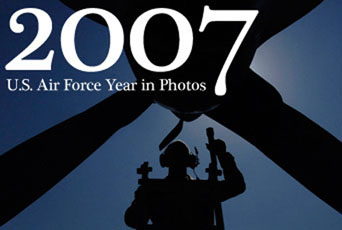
2007 Year in photo review

The year 2007 was a time for reflection and success as Airmen across the world defended their nation through air, space and cyberspace.